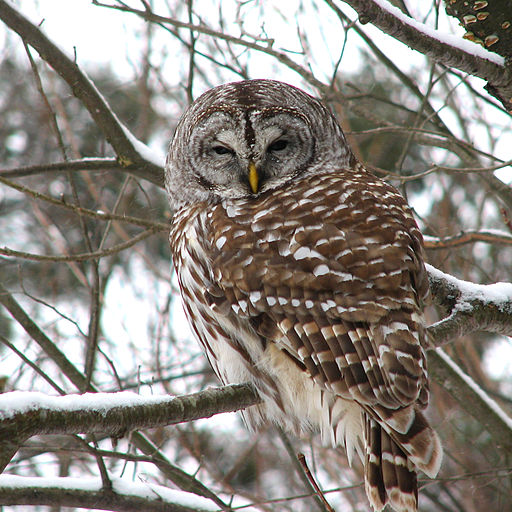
Barred owl